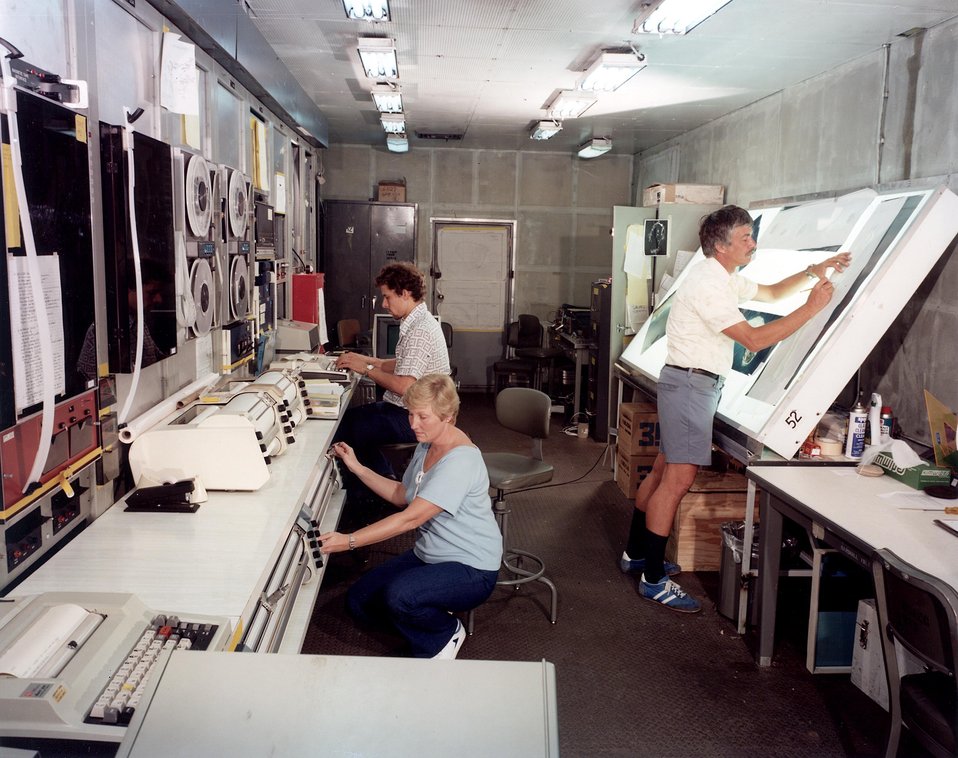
Computer room aboard the USNS Wheeling used to record and analyze data from aerial radiological survey.
11-15-78